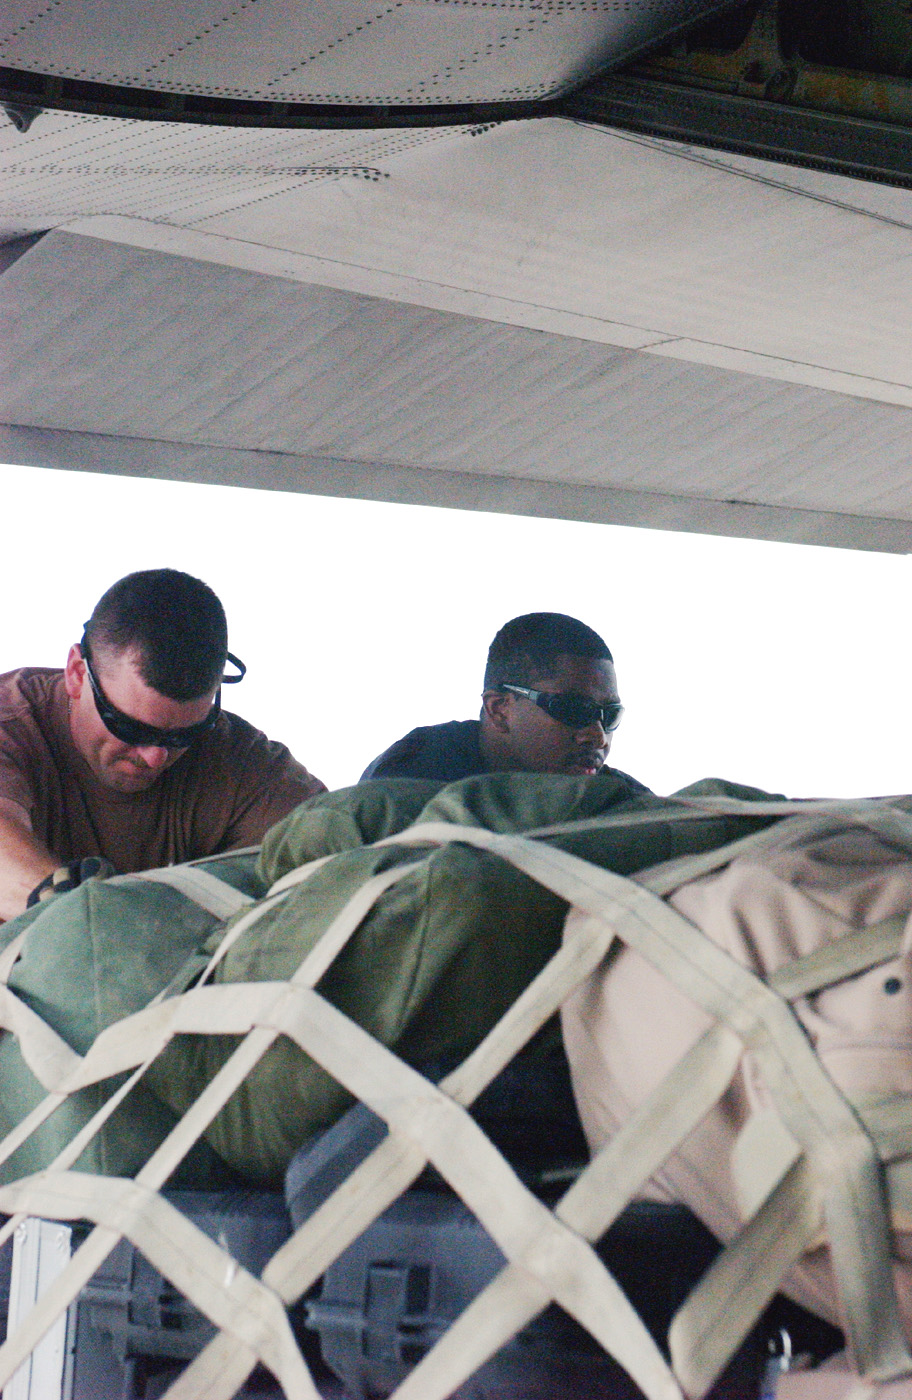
Pushing freight: ATOC moves cargo in, out of Ali quickly

Staff Sgts. Joe Lankford (left) and Elston Robinson push a baggage pallet onto a C-130 Hercules on the ramp at Ali Base, Iraq. The sergeants work in the Air Terminal Operations Center and are assigned to the 407th Expeditionary Logistics Readiness Squadron.